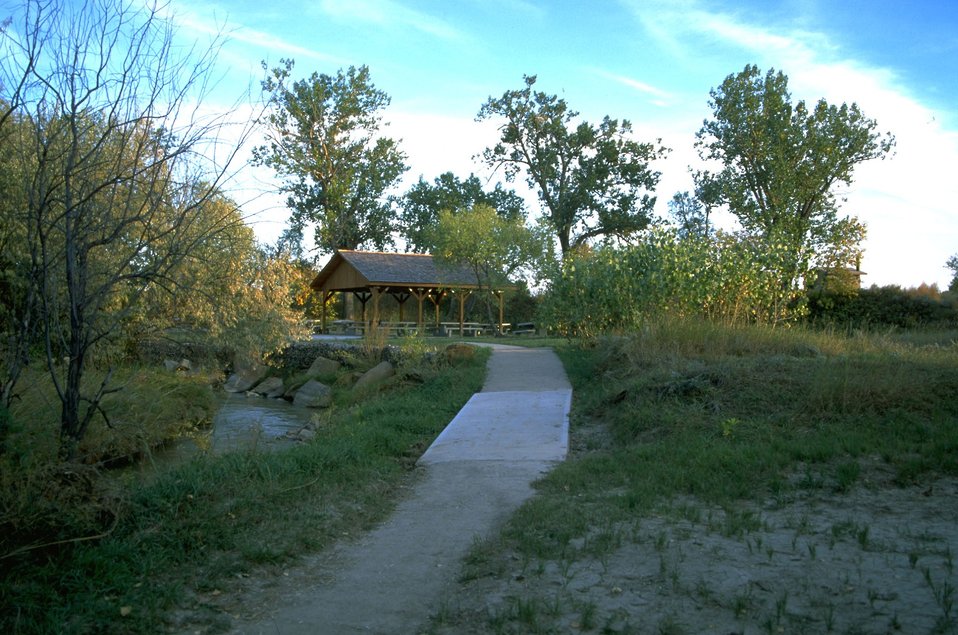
Group shelter and picnic area at Matthews Recreation Site